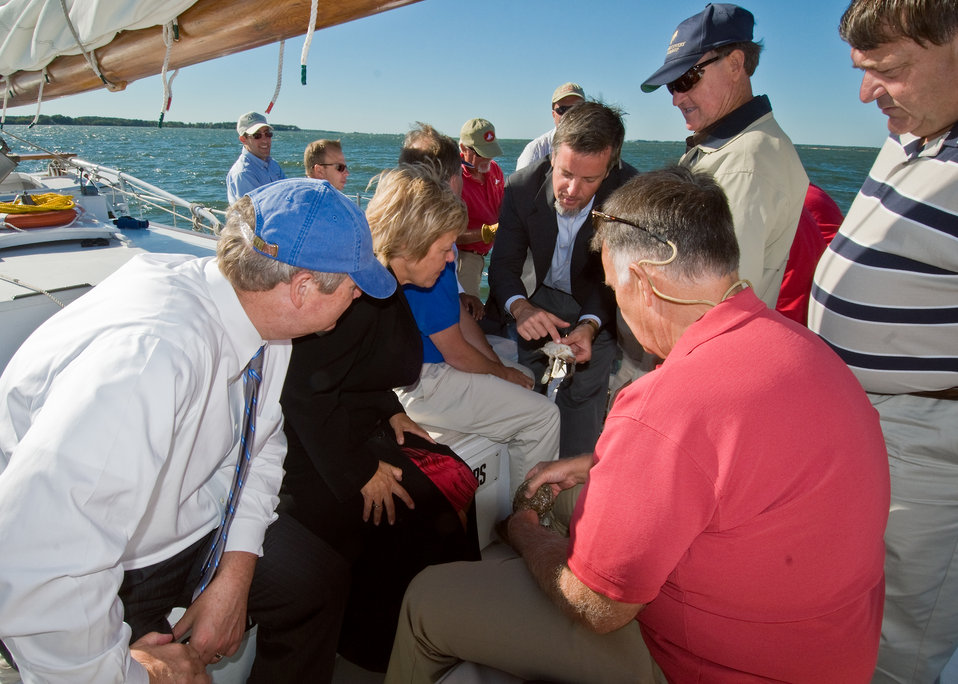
From left: Agriculture Secretary Tom Vilsack, Christie Vilsack, Doug McKalip, Confidential Assistant to the Secretary, Captain Russell Dize, waterman and Oyster Recovery Project board member, Dr. Don Meritt, University of Maryland, Horn Point Laboratory, Oyster Hatchery Manager and Don Webster, Maryland Department of Agriculture listen to McKalip, explain how to tell the sex a Maryland Blue Crab. The crab McKalip is holding is a male recognized by the bottom part of its shell that looks like the Washington Monument. Secretary Vilsack visited the University of Maryland Horn Point Center for Environmental Science in Cambridge, Maryland, Monday, September 20, 2010 while on a tour to visit rural communities, farmers and watermen to discuss funding for water and soil conservation programs available through the Department of Agriculture. The conservation programs will aid rural communities, farmers and watermen on the Chesapeake Bay in their efforts to improve the water quality of the Chesapeake Bay. USDA Photo 10di1497-91 by Bob Nichols.